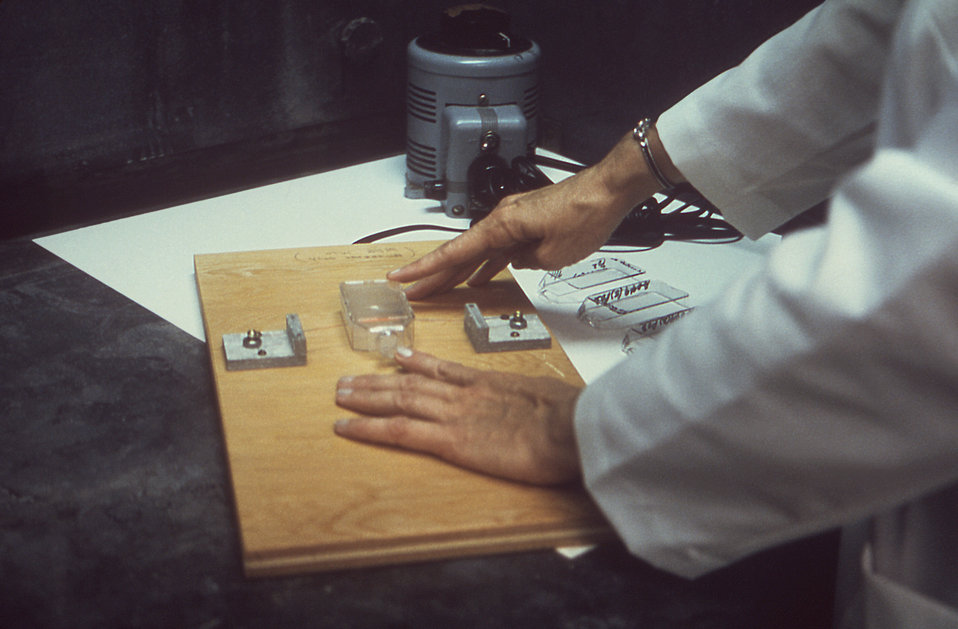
This laboratorian was conducting an amniotic fluid cytogenetic analysis, and was in the process of removing the top of a 25 sq. cm. Falcon� Flask by using a 'hot' wire, which will remove the top at the flask's neck. See PHIL 3571, for a view of a Falcon� Flask that had its top removed.